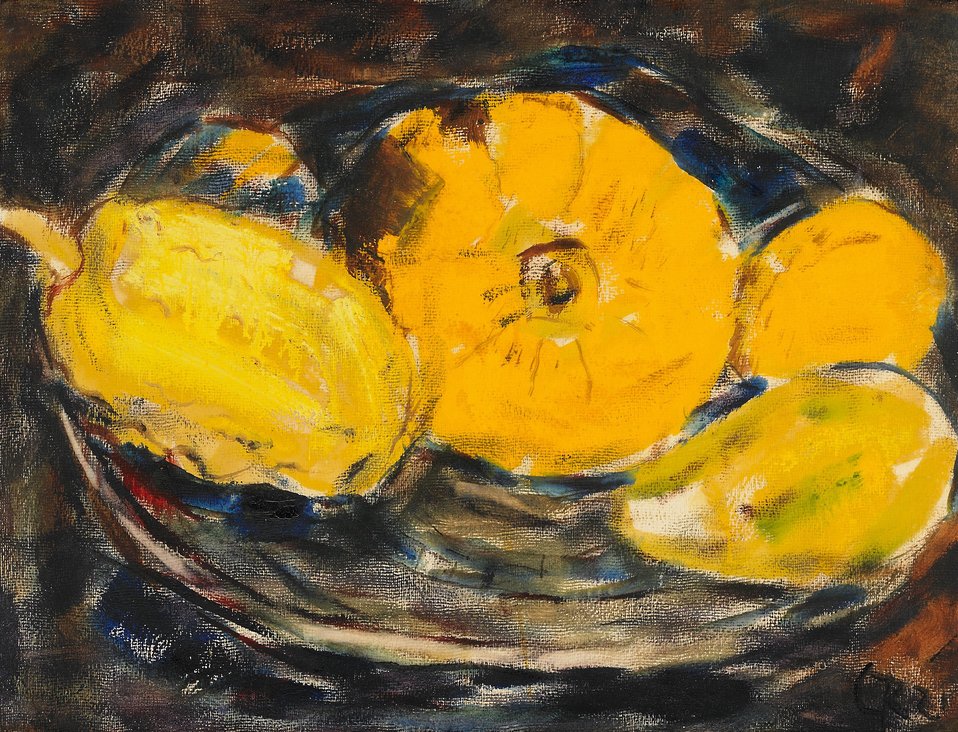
Kürbisse in einer Schale. 1921. Aquarell und Tempera auf Papier. 49,5 x 66,5 cm. Monogrammiert und datiert unten rechts: CR 21.